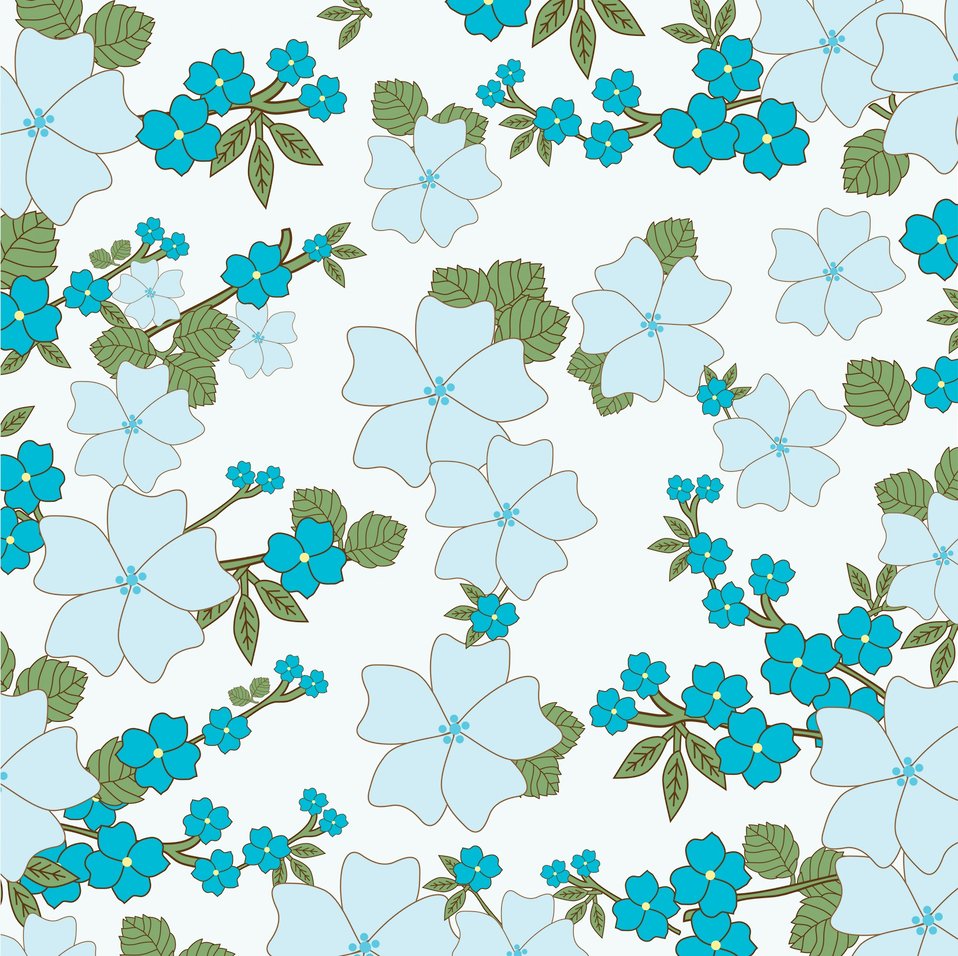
Vintage floral background blue

Blue vintage flowers, floral wallpaper background pattern for scrapbooking.